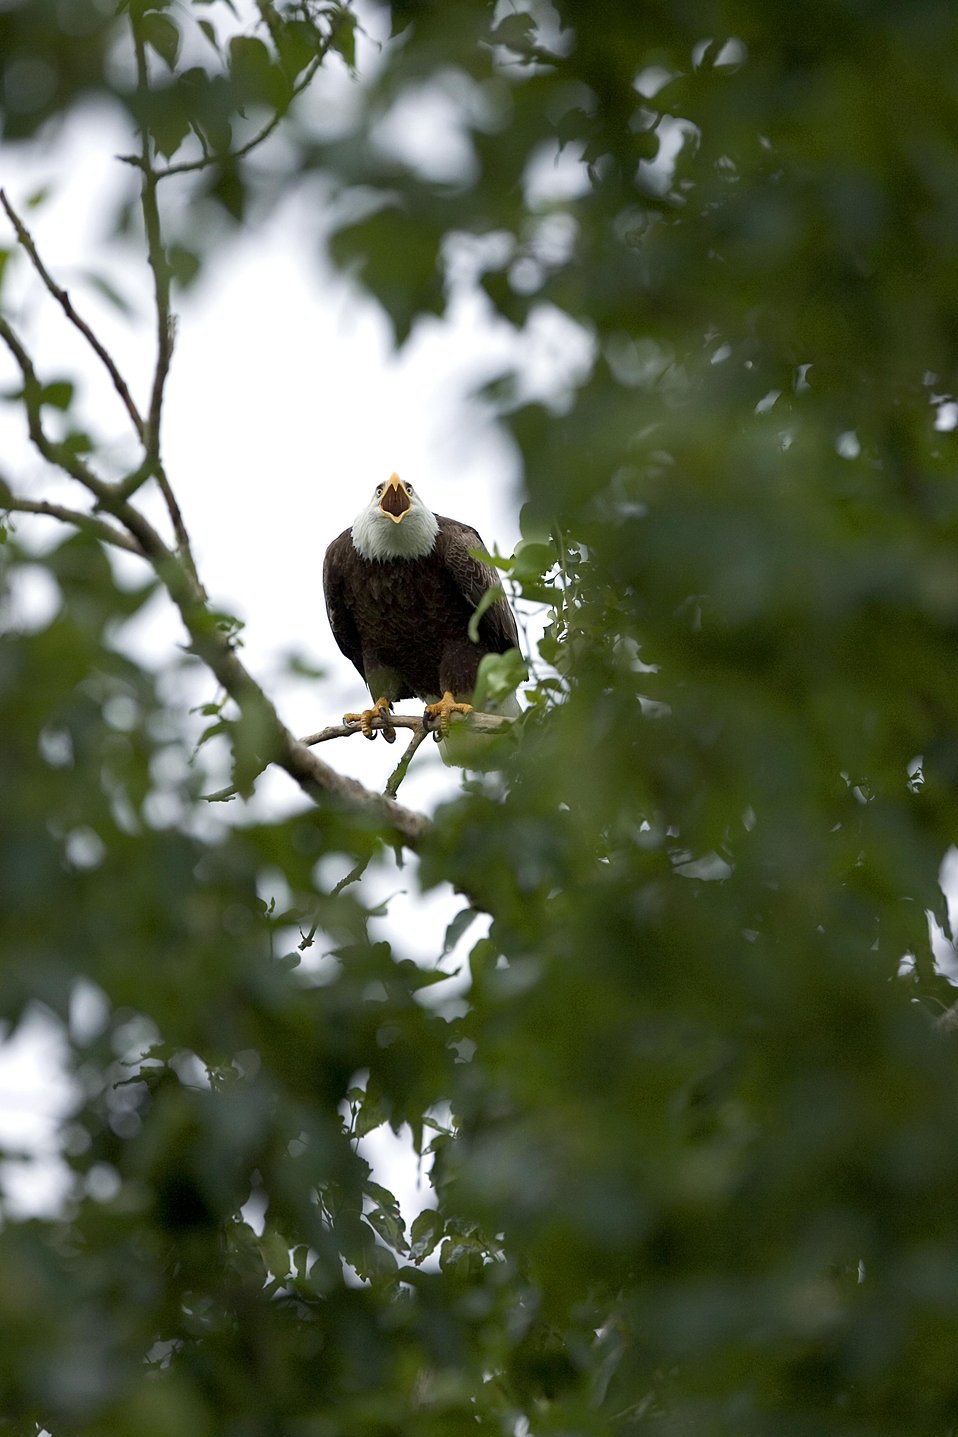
Wildlife of Kodiak Refuge

Bald Eagle